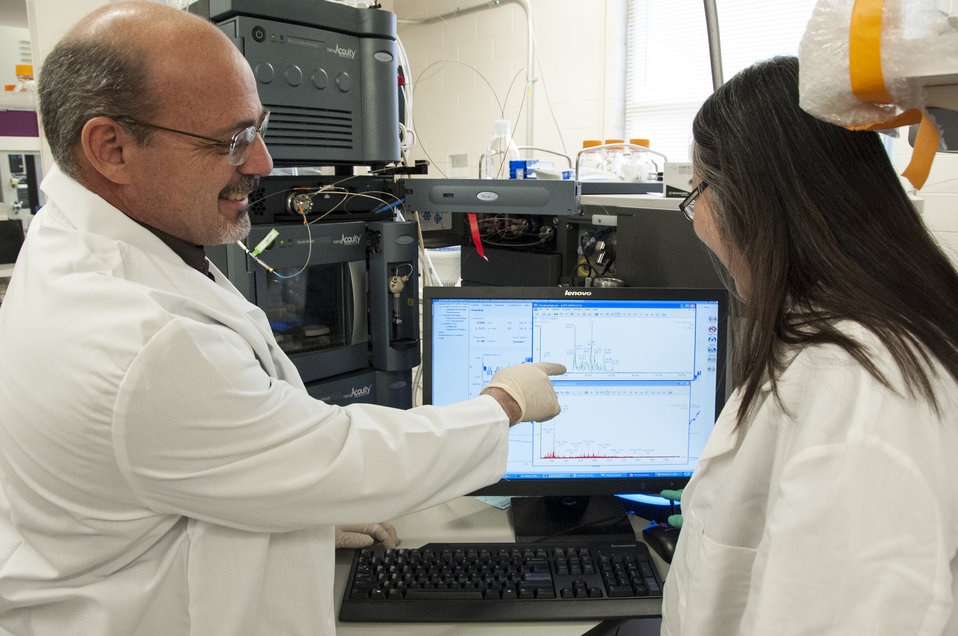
Bio Threats: FDA's A-Team (6306)

Senior staff scientist John F. Cipollo, Ph.D., and analytical chemist Yanming An, Ph.D., use mass spectrometry technology to analyze glycoconjugates— carbohydrates bonded to either a fat molecule or a protein. They’ve proven valuable in vaccines used to treat meningitis, pneumonia and blood infections. The scientists hope to discover molecules that will lead to the development of new vaccines.

Scientists at FDA’s Center for Biologics Evaluation and Research (CBER) work to facilitate the development of safe, effective treatments that would neutralize biological threats to public health and security. CBER regulates preventive and therapeutic vaccines, blood and blood products, human cell and tissue-based products, gene therapies and xenotransplantation. To learn more, read this FDA Consumer Update:

• FDA Teams Prepare for Biological Threats